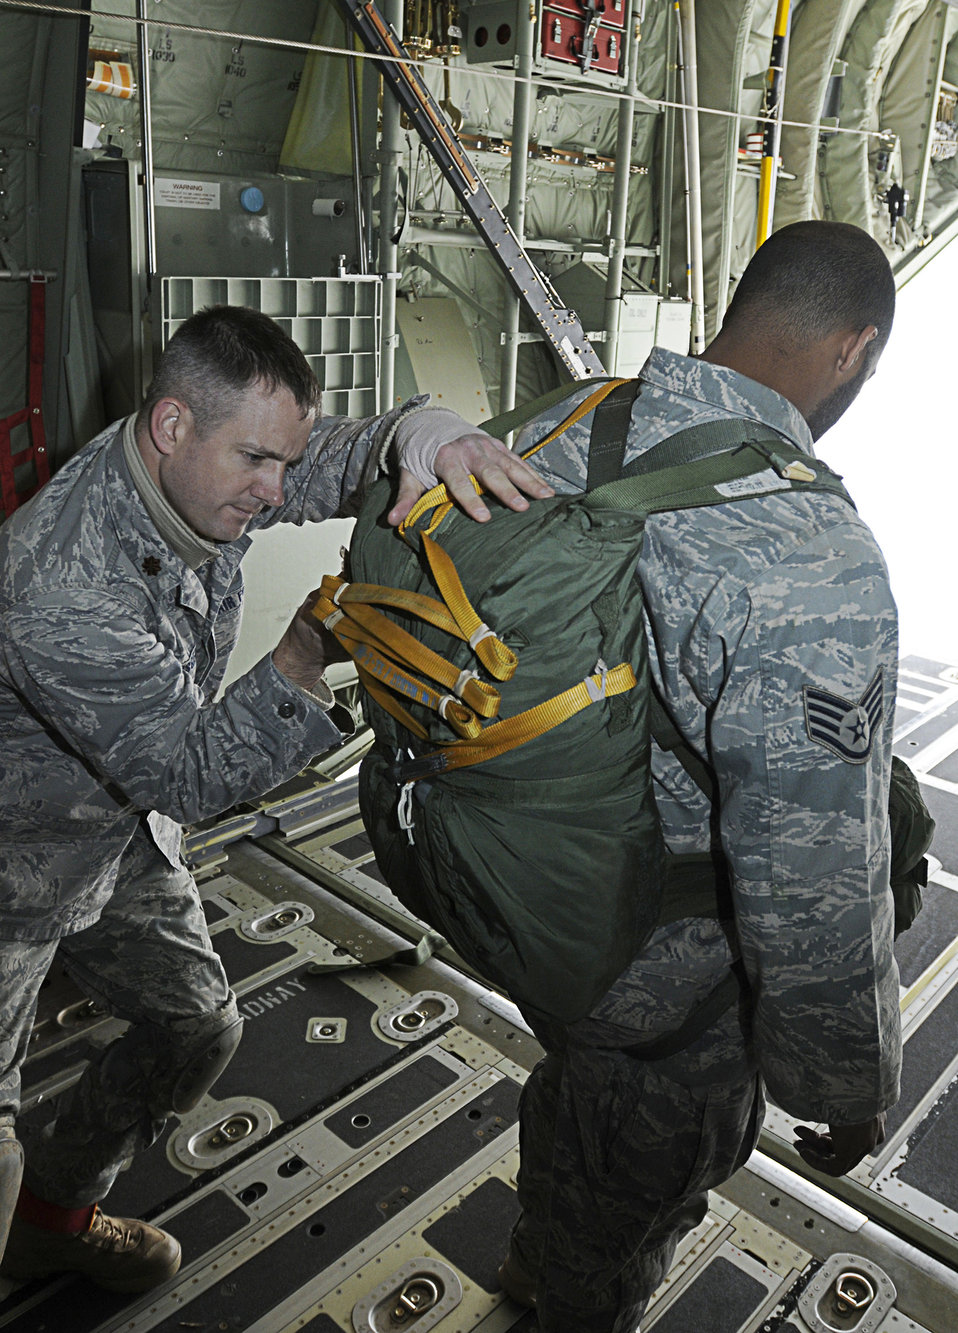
Thracian Spring 2011

Maj. Jason Medsger performs a jump-master personnel inspection on Staff Sgt. Myron Austin April 29, 2011, during Thracian Spring 2011 in Plovdiv, Bulgaria. Major Medsger is the commander of the 435th Security Forces Squadron. Sergeant Austin is a paratrooper with the squadron.